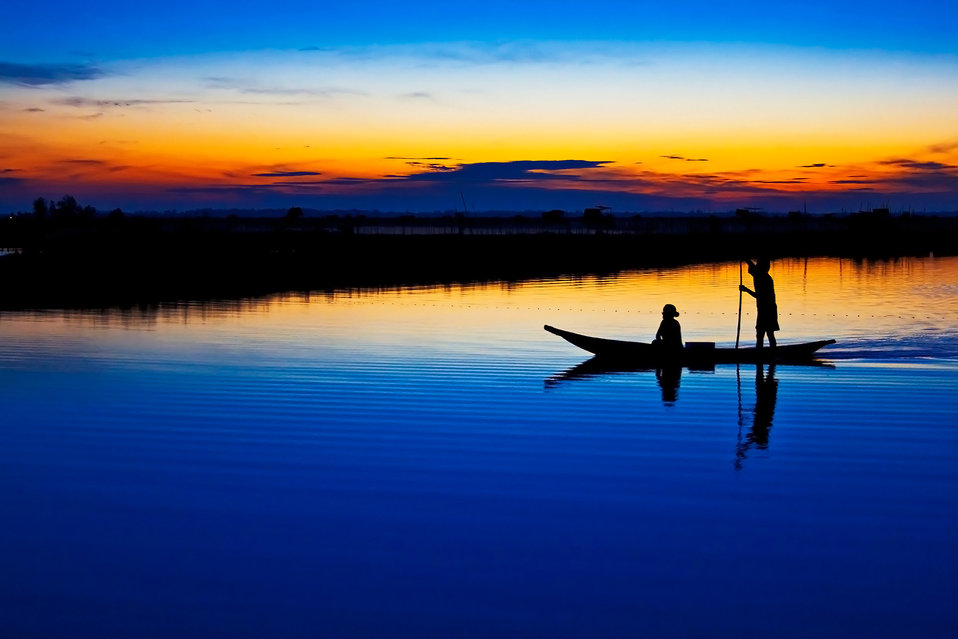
Silent sunrise #2

Dawn in the lagoon, hue province, vietnam..